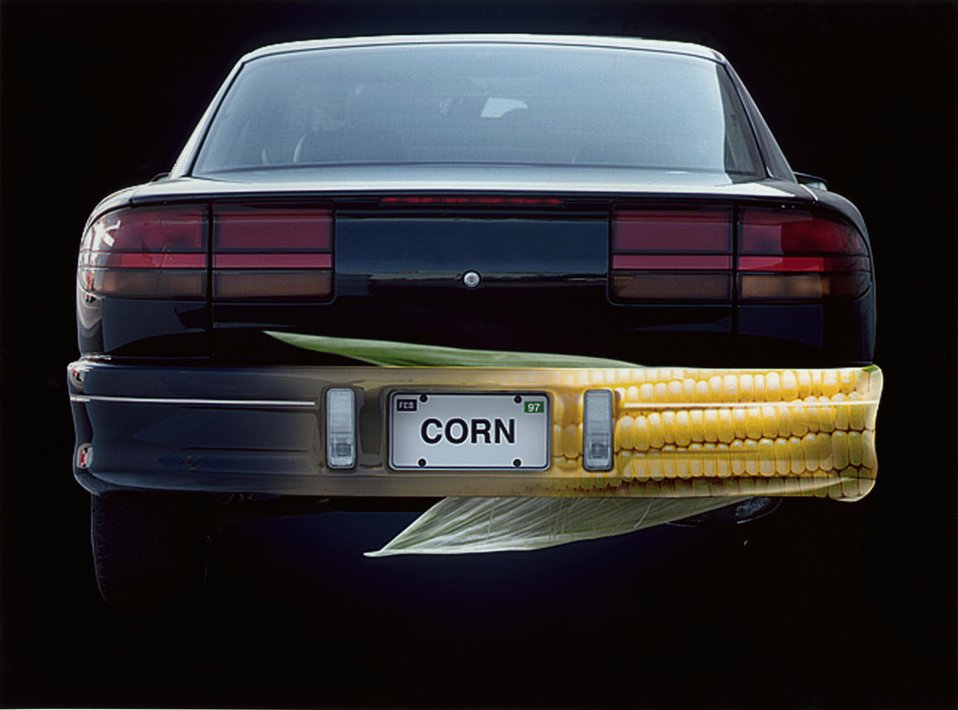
TURNING CORN INTO HIGH-VALUED CHEMICALS FOR INDUSTRIAL USE.

TURNING CORN AND OTHER AGRICULTURAL PRODUCTS INTO HIGH-VALUED CHEMICALS IS ONE OF THE ALTERNATIVE USES FOR AGRICULTURAL PRODUCTS THAT RESEARCHERS AT PNNL ARE PURSUING. CHEMICALS CAN BE USED AS PLASTICS FOR CAR COMPONENTS, FOOD ADDITIVES, CLOTHING FIBERS, POLYMERS, PAINTS, FUEL FOR AUTOMOBILES, AND OTHER INDUSTRIAL AND CONSUMER PRODUCTS.